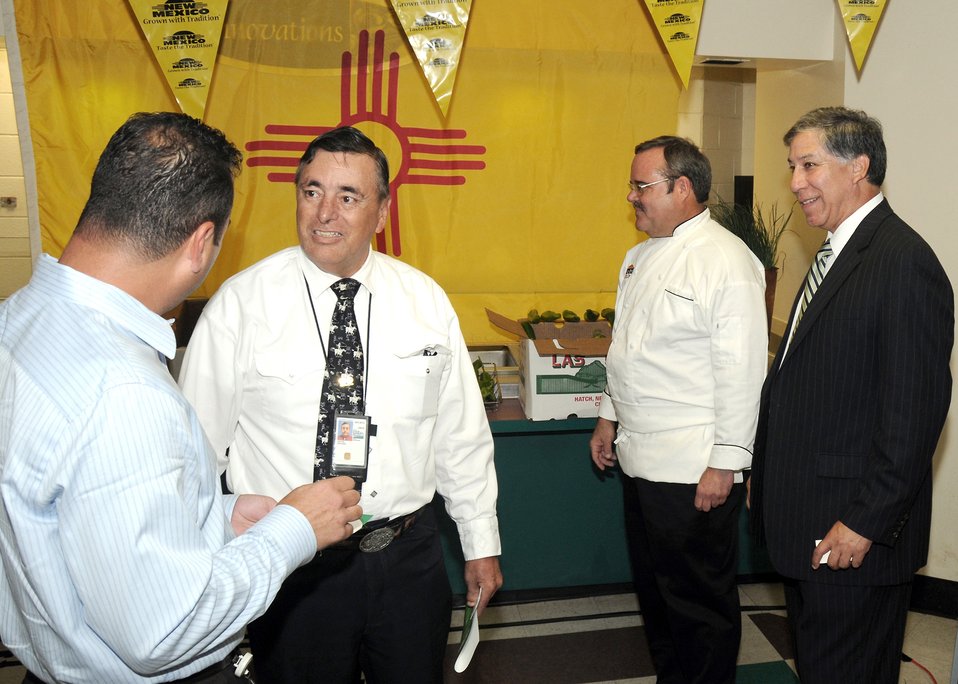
Agriculture Under Secretary for Marketing and Regulatory Programs (MRP) Edward Avalos and guest Chef Dennis Hogan look over the New Mexico Green Chile dishes that Chef Hogan created for the kick off event to celebrate New Mexico Green Chiles at the U. S. Department of Agriculture (USDA) in the south building cafeteria, in Washington, DC, on Thursday, Sep. 2, 2010. Two USDA employees sample the New Mexico Green Chile recipes. USDA photo 10di1486-05.